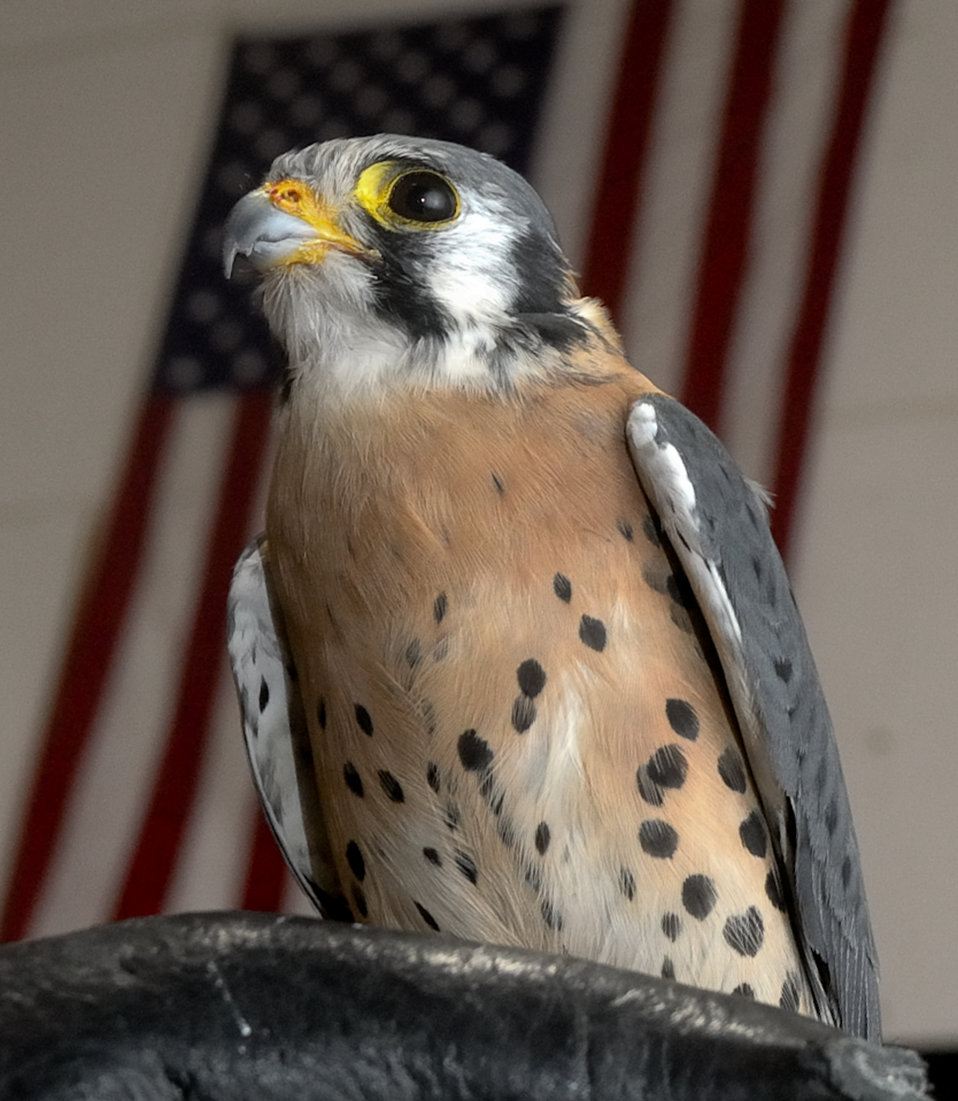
Small kestral captures school's attention

Cadet 3rd Class Danielle Cortez and